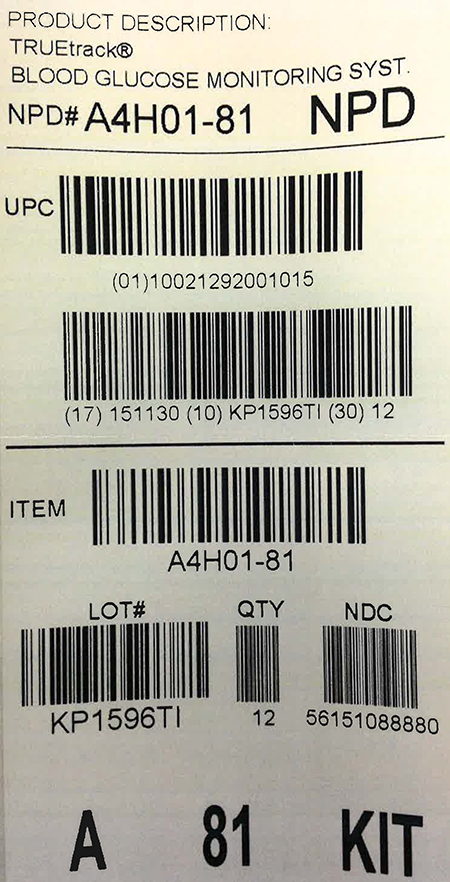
RECALLED – Blood Glucose Meters

January 2, 2014 – Product Recall – Nipro Diagnostics, Inc. Initiates Voluntary Recall of Certain TRUEbalance and TRUEtrack Blood Glucose Meters.